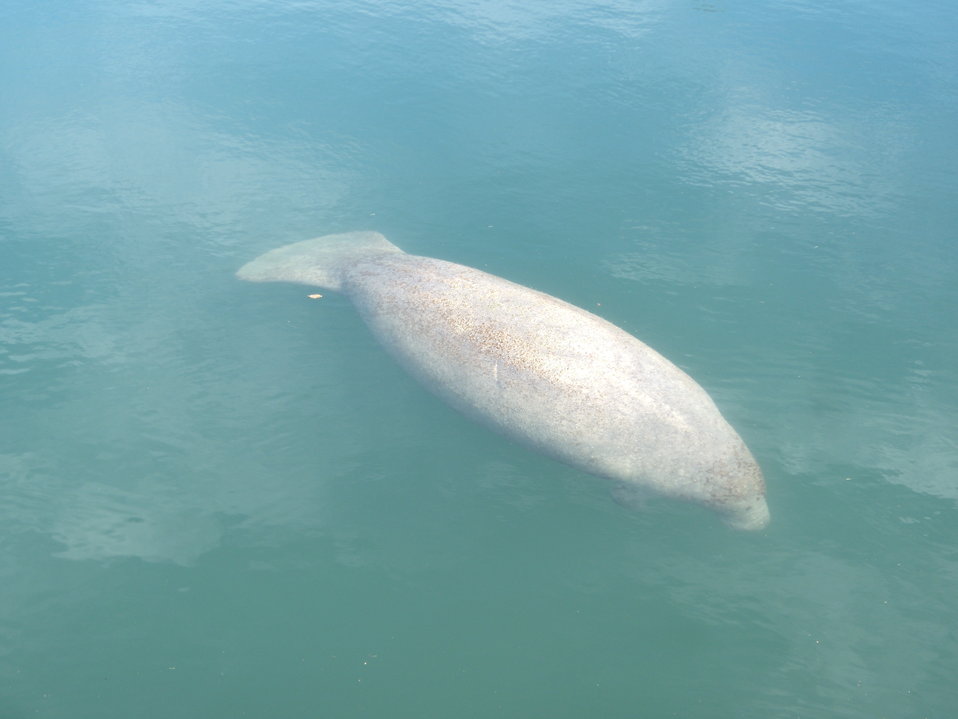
West Indian Manatee, Great Harbour Cay Harbor